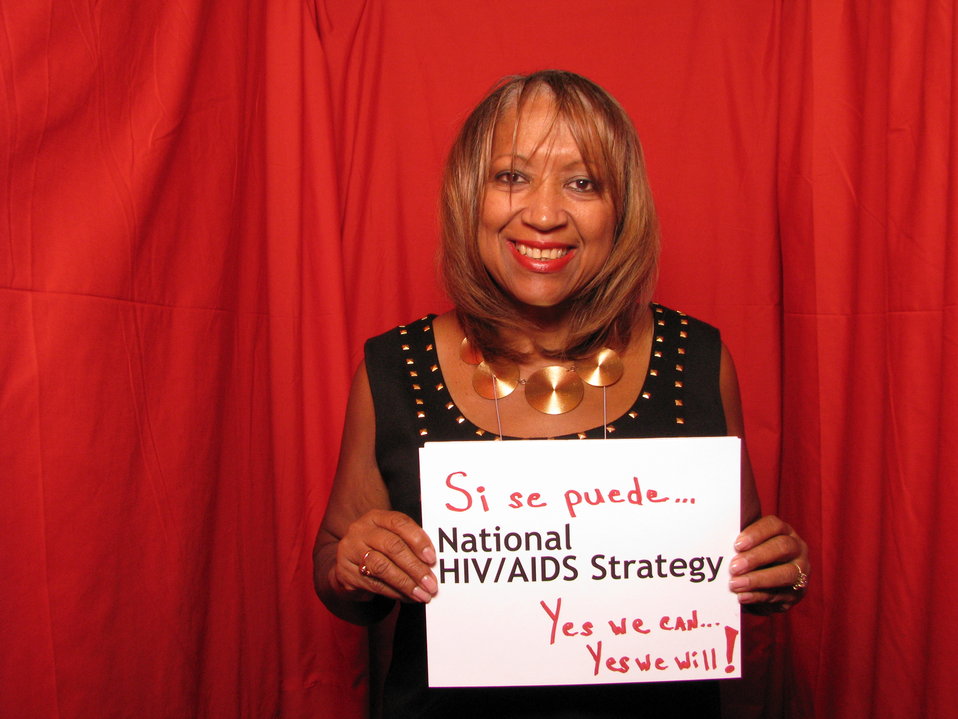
Si Se Puede...National HIV/AIDS Strategy. Yes We Can...Yes We Will!

From the AIDS.gov photo booth at the U.S. Conference on AIDS, September 2010 (Orlando, FL).